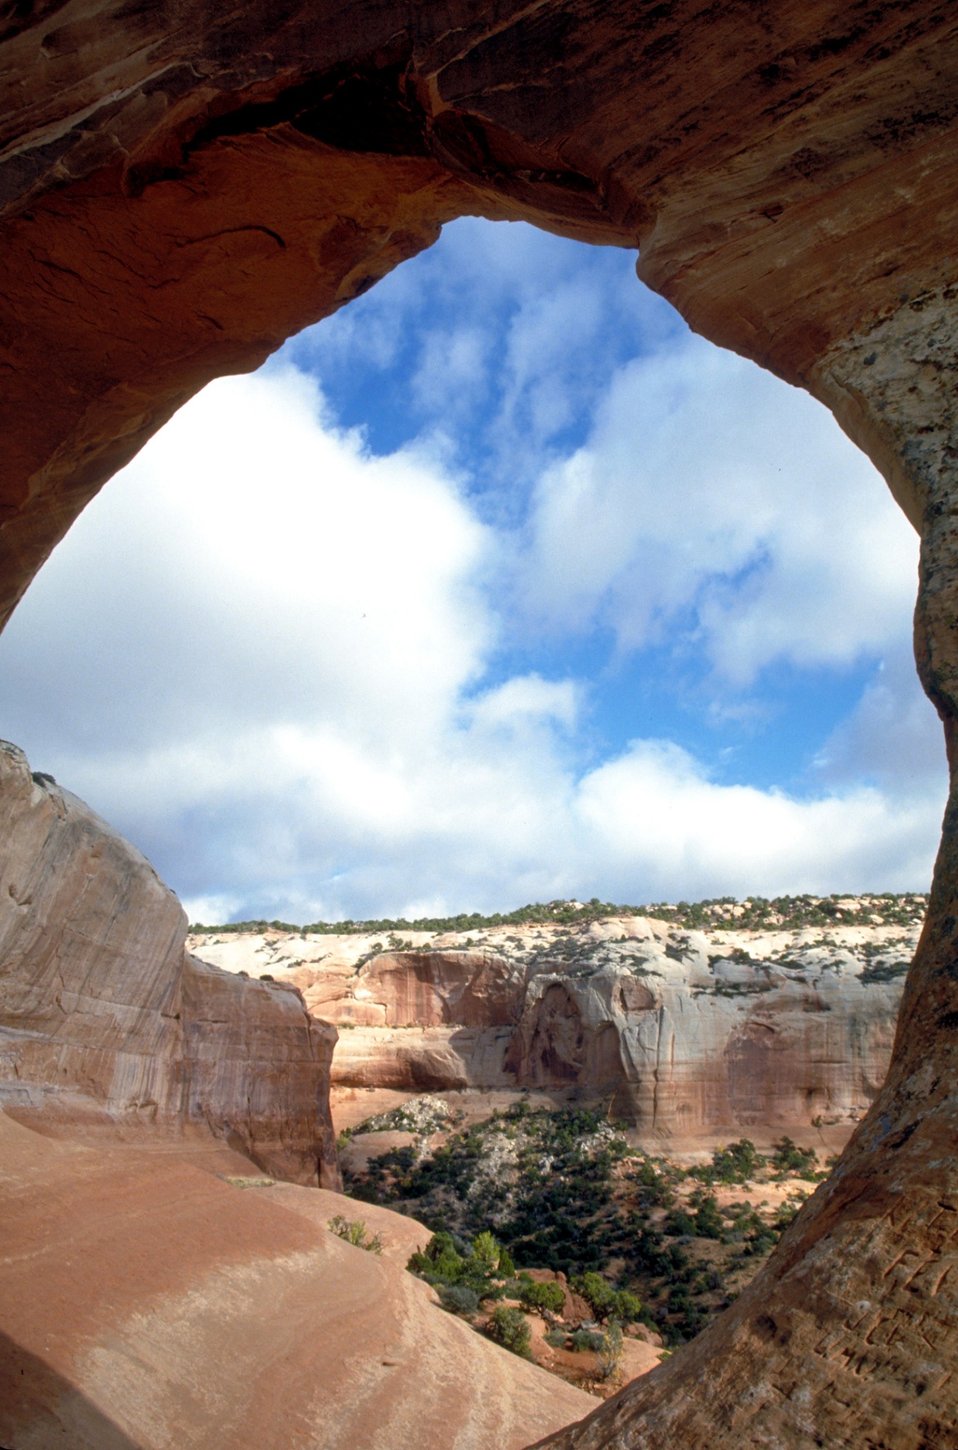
Wilson Arch south of Moab, Utah.